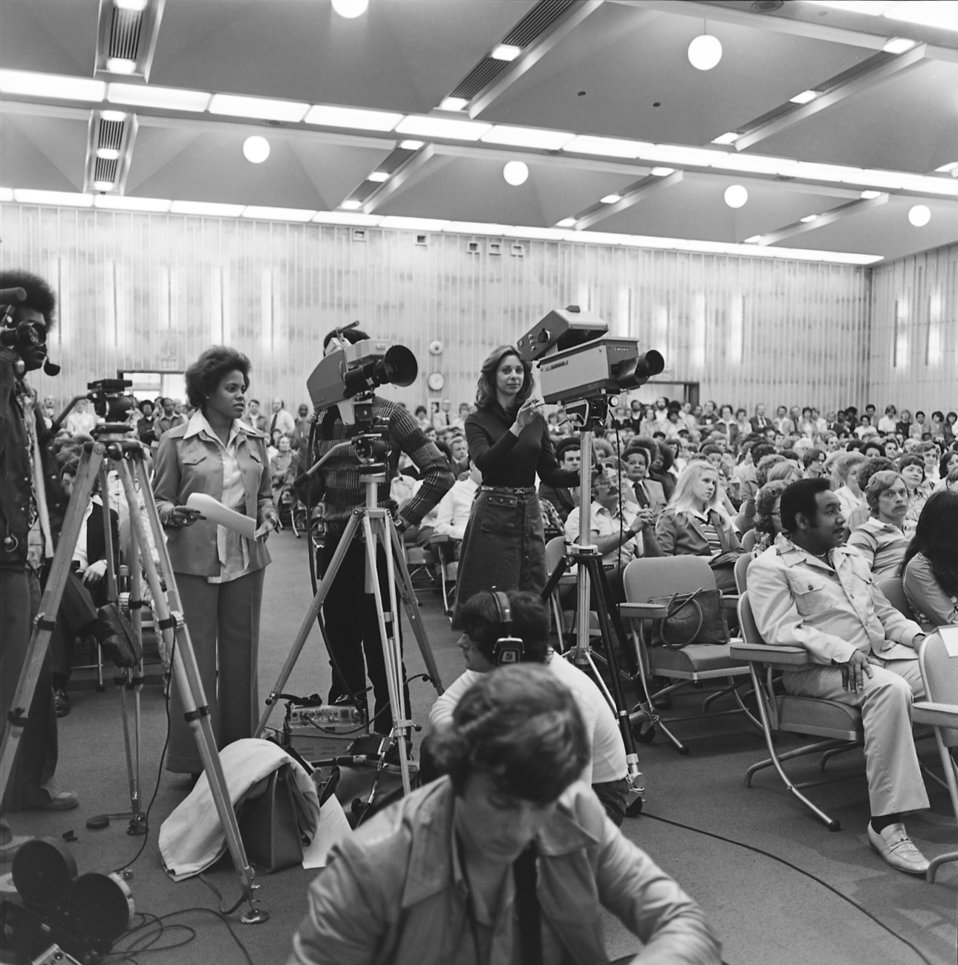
This 1977 photograph was taken during the naming of Dr. William H. Foege as Director-Designate of the CDC.